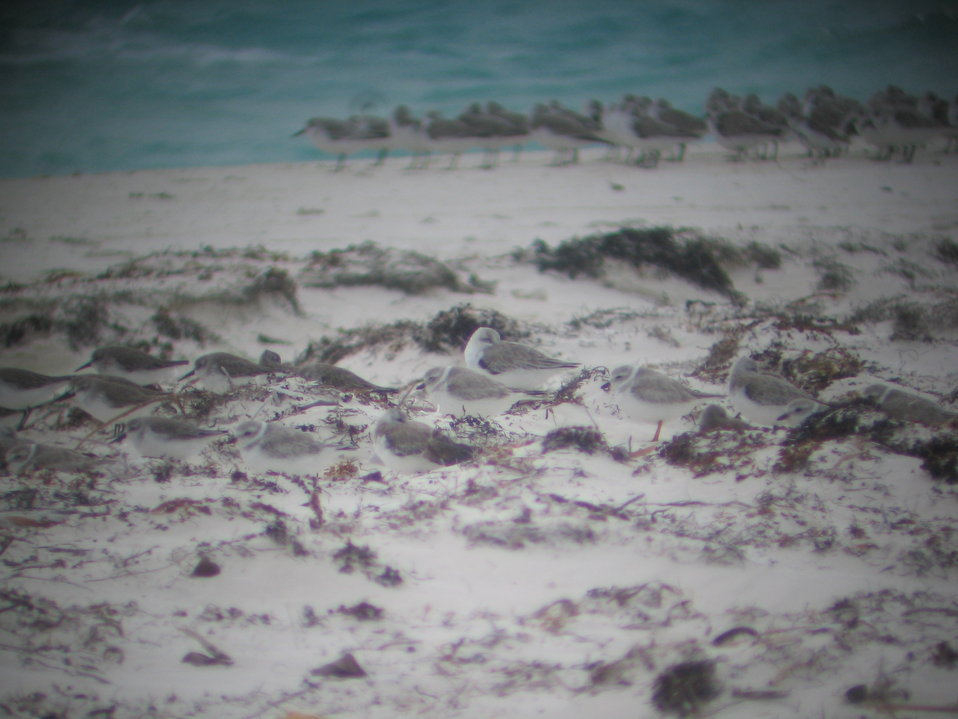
Mixed shorebird flock through spotting scope

Piping plovers (foreground), sanderlings (one of the most commonly seen shorebird species during survey), other sandpipers at Berry Islands.